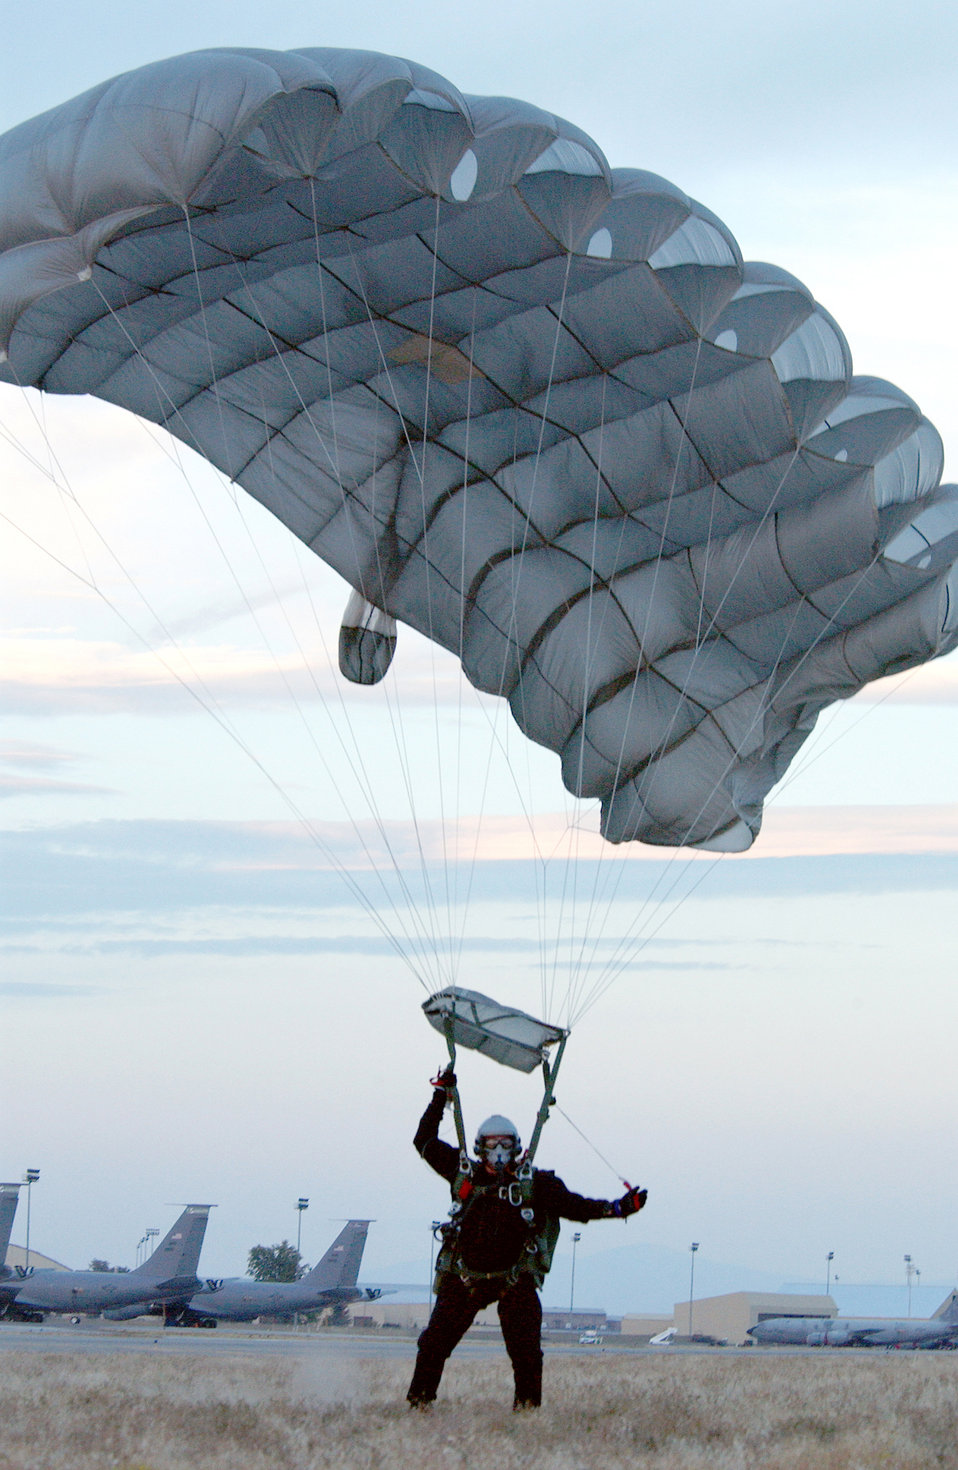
Fairchild's first 25,000-foot jump

FAIRCHILD AIR FORCE BASE, Wash. -- Tech. Sgt. Steven Filby has a safe landing here after parachuting more than 25,000 feet from a C-17 Globemaster III. Filby is the personal parachute program manager for Fairchild's 336th Training Group.